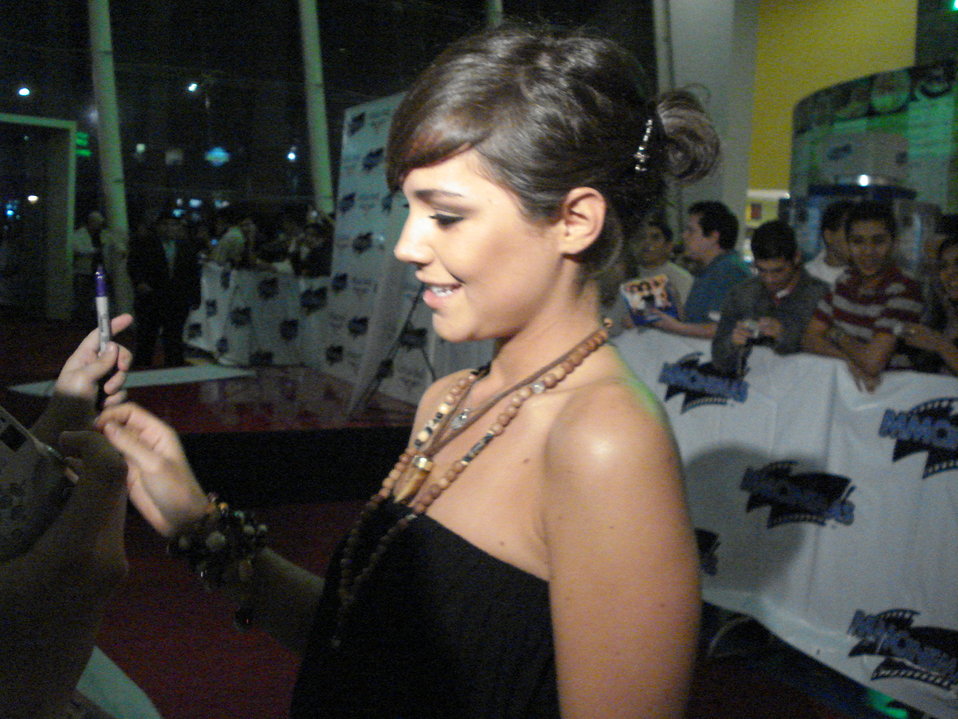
Camila Sodi in Ninas Mal Premiere at Monterrey